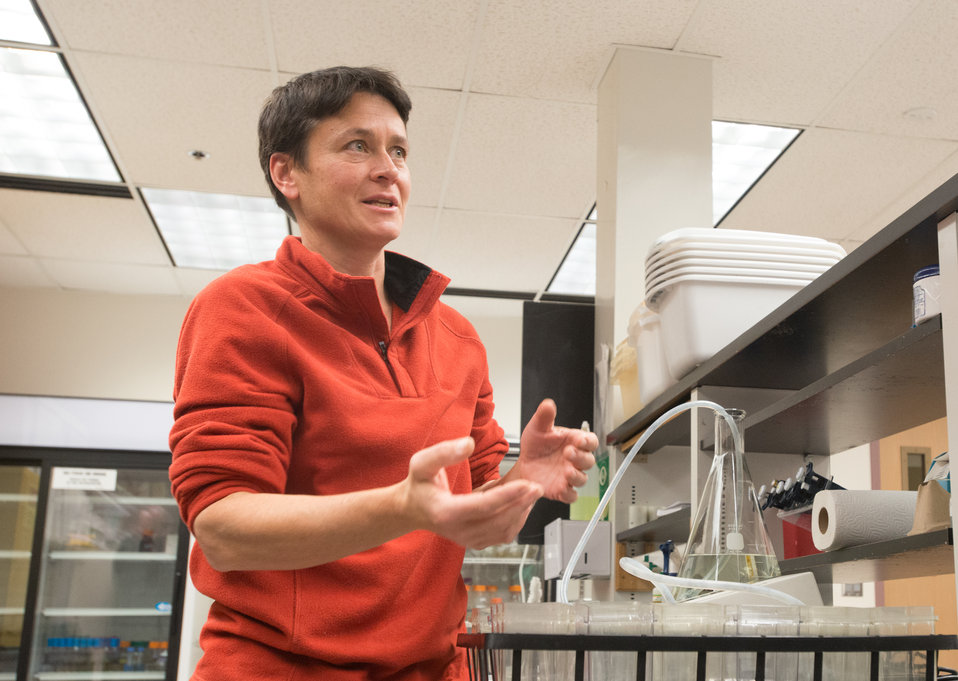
U.S. Department of Agriculture (USDA) Agricultural Research Service (ARS) National Center for Genetic Resources Preservation (NCGRP) Biological Science Technician Barbara Ambruzs explains the importance of the work being done on plant tissue cultures to Agriculture Secretary Tom Vilsack during the Secretary’s visit to the NCGRP in Ft. Collins, CO on Wednesday, Nov. 6, 2013. NCGRP is the largest agricultural gene bank facility in the U.S. The NCGRP staff conducts groundbreaking research to develop more efficient and effective means for preserving plant and animal germplasm, and for better understanding the genetic structure of these invaluable materials. The research findings, preservation techniques, and specialized technology developed by the NCGRP have been adopted by gene banks around the world: many international scientists travel to the NCGRP for research and training.